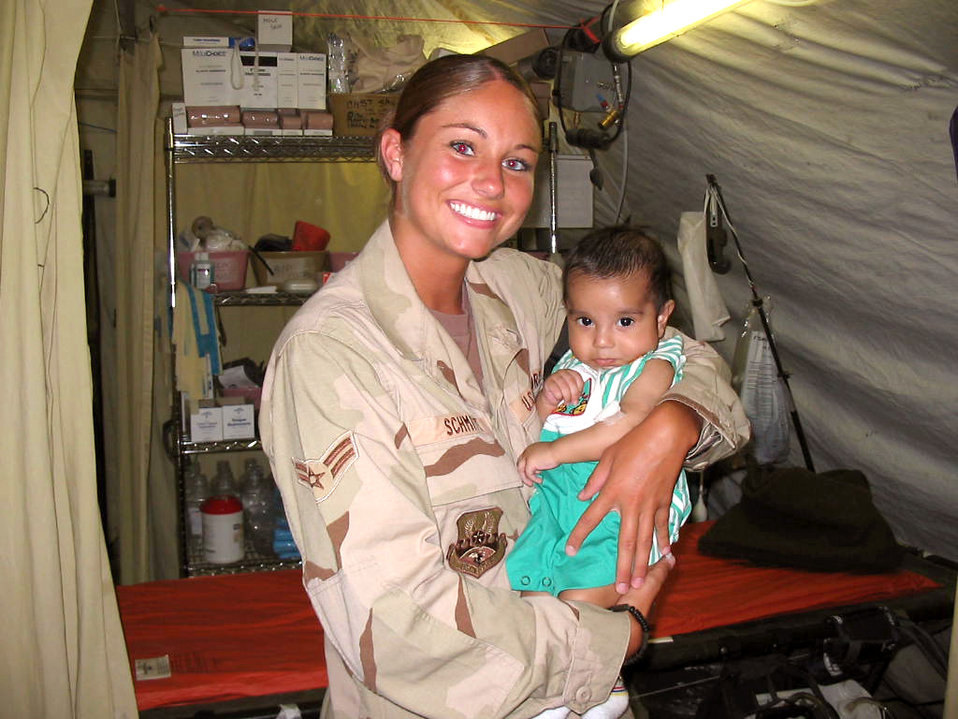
Medical Airmen save infant's life

KIRKUK AIR BASE, Iraq -- Airman 1st Class Nicole Schmitt holds a 3-month-old local boy after medics with the 506th Expeditionary Medical Squadron here successfully performed surgery to save the baby's life.